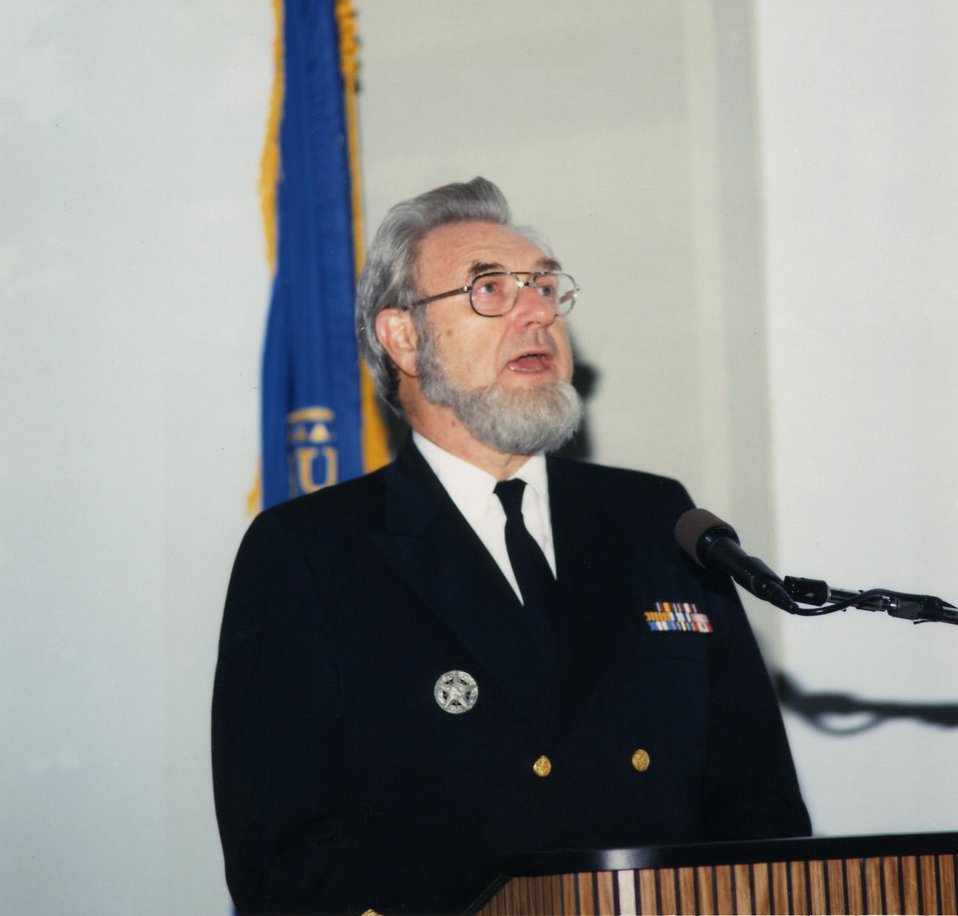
This photograph showed former Surgeon General Dr. C. Everett Koop while speaking at the Centers for Disease Control's Building 15 dedication ceremony on organization's Roybal Campus located in Atlanta, Georgia.